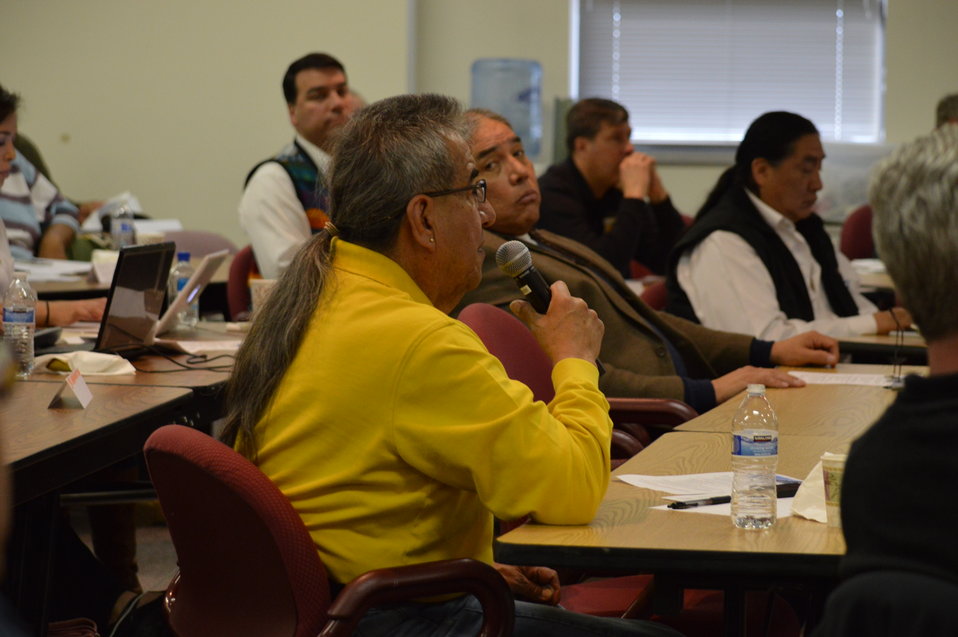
Discussion

Questions and comments are raised at the Eagle Summit III in Denver, Colorado on March 20, 2014 at the Rocky Mountain Arsenal National Wildlife Refuge.